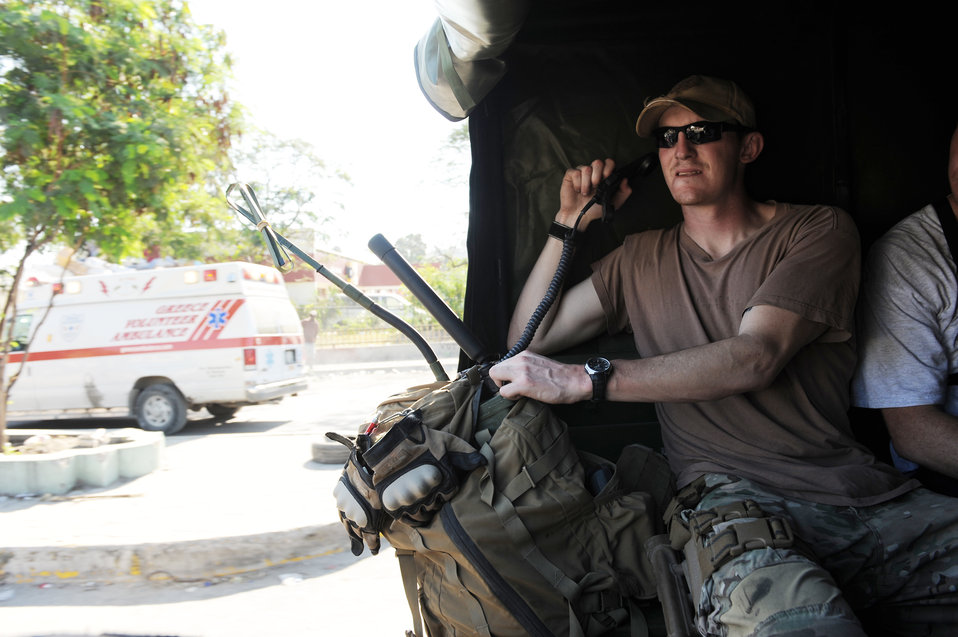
Haiti Earthquake Relief

Staff Sgt. Nick Jones maintains communication with headquarters while in route to a possible trapped Haitian Jan. 17, 2010, in Port-au-Prince, Haiti. Sergeant Jones is a combat weatherman from the 23rd Special Tactics Squadron at Hurlburt Field, Fla. Department of Defense assets have been dispatched to Haiti to assist with humanitarian assistance and disaster relief after a magnitude 7 earthquake hit the country Jan. 12, 2010.